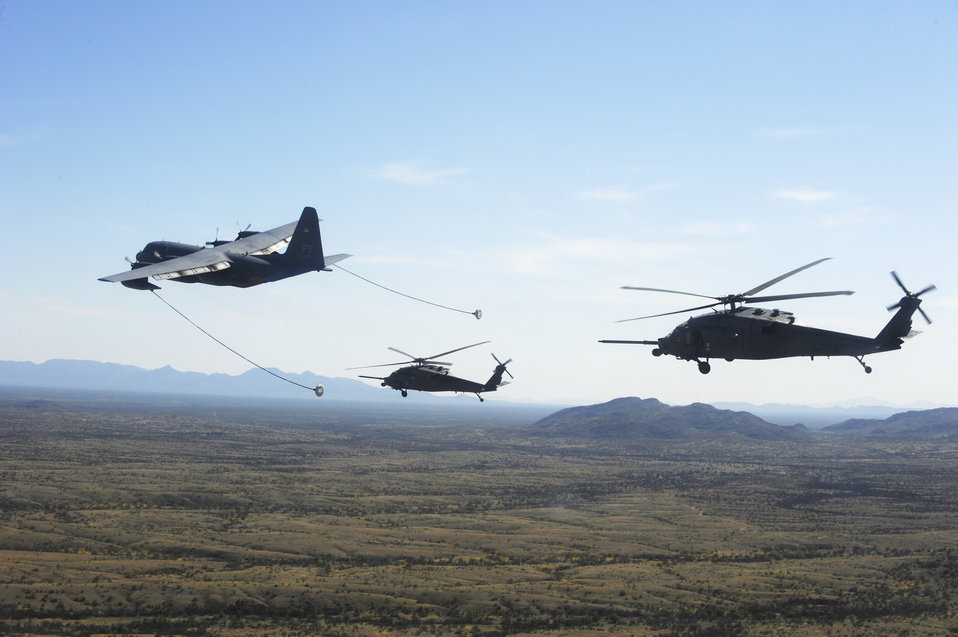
Angel Thunder 2010

An HC-130P/N King refuels two HH-60 Pave Hawks April 15, 2010, over the desert surrounding Davis-Monthan Air Force Base, Ariz., during Angel Thunder 2010. The HC-130 is with the 71st Rescue Squadron at Moody AFB, Ga. Angel Thunder 2010, an Air Combat Command-sponsored exercise, will be the largest personnel recovery and combat search and rescue exercise to date, combining Department of Defense and non-DOD assets.